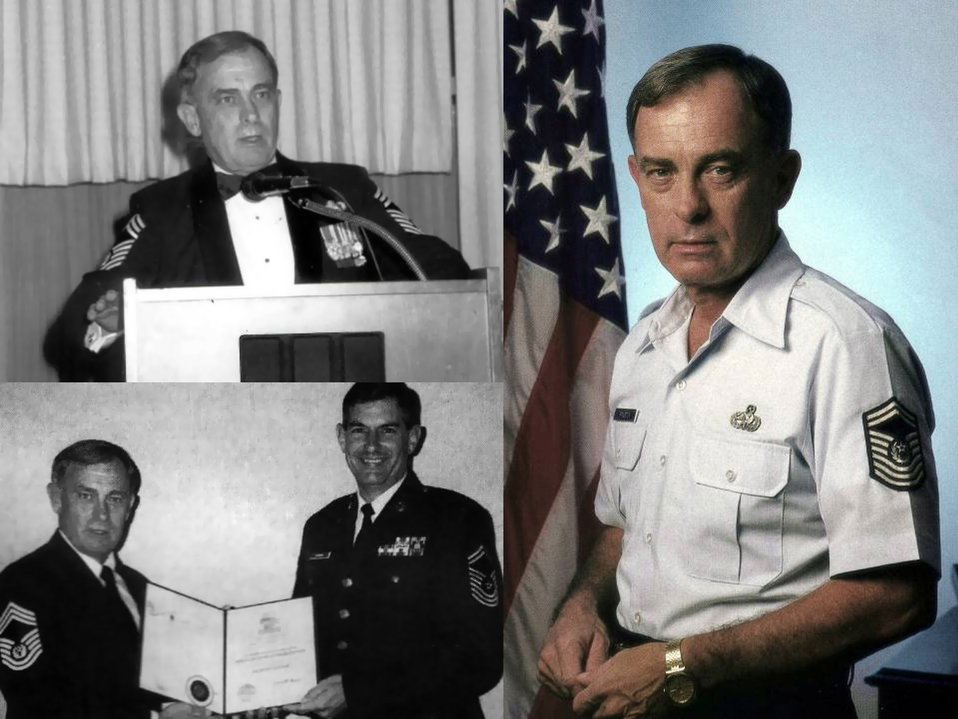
Chief Pfingston loses fight with cancer

Retired Chief Master Sgt. Gary Pfingston, the 10th chief master sergeant of the Air Force, died of cancer June 23 in San Antonio.